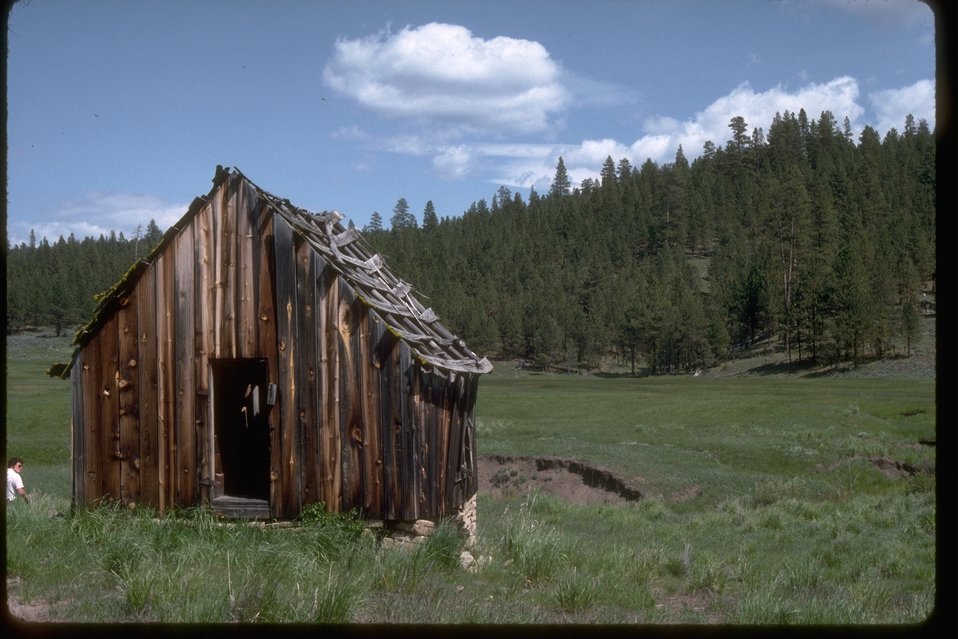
Historic building on a ranch in Izzee, Oregon.